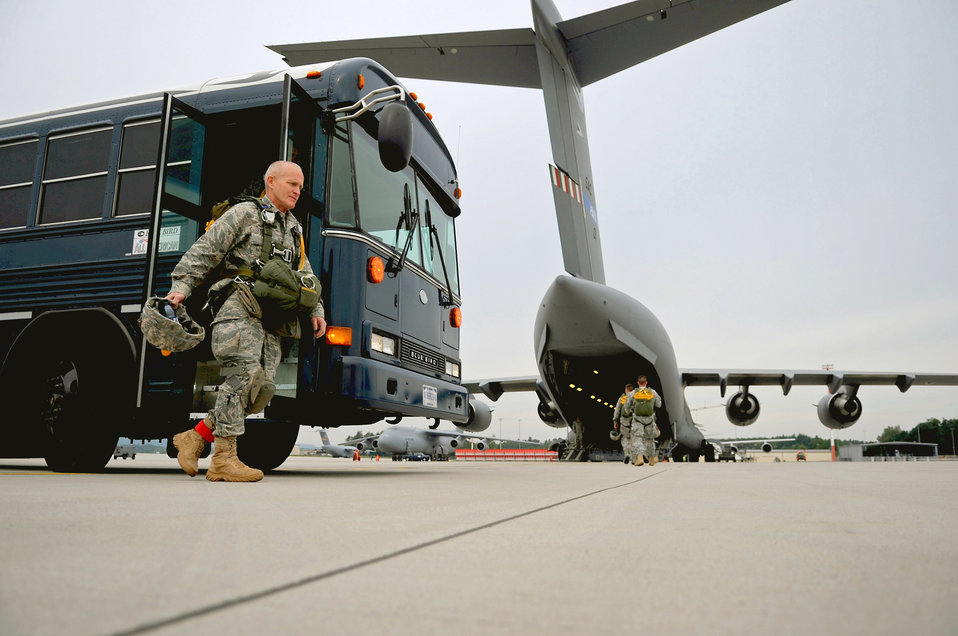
Ramstein Airmen participate in NATO jump

Col. Timothy Brown, 435th Contingency Response Group commander, steps off a bus to load a C-17 Globemaster III at Ramstein Air Base, Germany, for an airborne jump June 14, 2010. The jump is part of NATO Jump Week and is the first time a NATO jump will be conducted from a C-17.